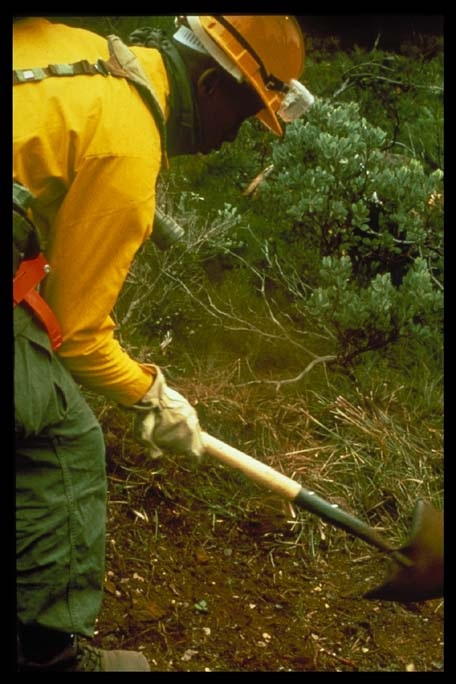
Line construction